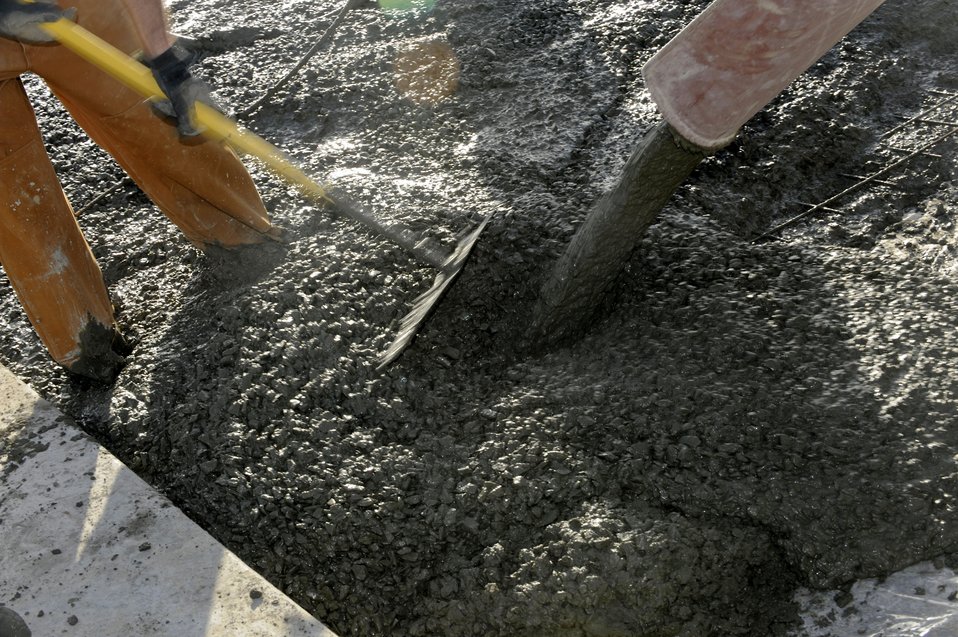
RED HORSE Airmen construct shelter pads

As concrete pours, members of the 809th Expeditionary RED HORSE Squadron work rapidly to smooth out the concrete May 15, 2010, at Kandahar Airfield, Afghanistan.